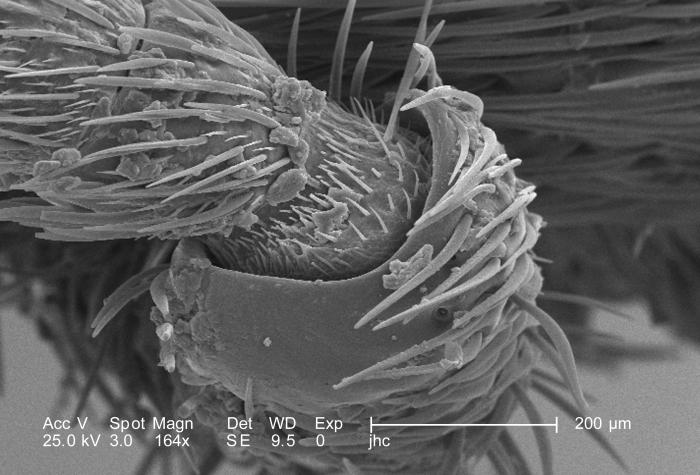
Magnified 164X, this scanning electron micrograph (SEM) revealed the morphologic exoskeletal details of a female velvet ant's, Dasymutilla sp., leg joint. As a member of the Phylum Arthropoda, i.e., Arthro = 'jointed', and poda 'leg', this insect is supported by a jointed exoskeleton, thereby, facilitating mobility of all of its body parts. The velvet ant is not really an ant at all, but a wasp, which merely resembles an ant, hence its name. It is a member of the Family, Mutillidae, and the Order, Hymenoptera.Note the presence of sensorial 'hairs' upon the surface of the exoskeleton, which are really not hairs as in the mammalian sense, i.e., composed of keratin, but chitinous extensions composed of the same protein as that of the exoskeleton itself. See PHIL 9889 for a higher magnification of this region.